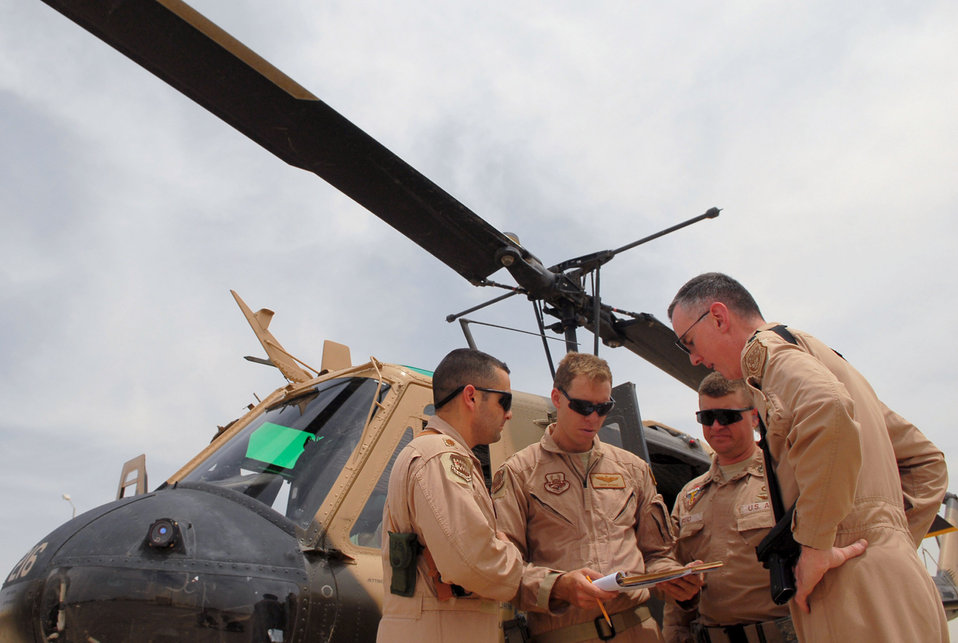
Iraqi air force performs medical evacuation

Pilots and flight medics discuss an Iraqi air force medical evacuation mission flown May 14 from the Air Force Theater Hospital at Balad Air Base, Iraq, to the U.S. Army's 86th Combat Support Hospital in Baghdad.